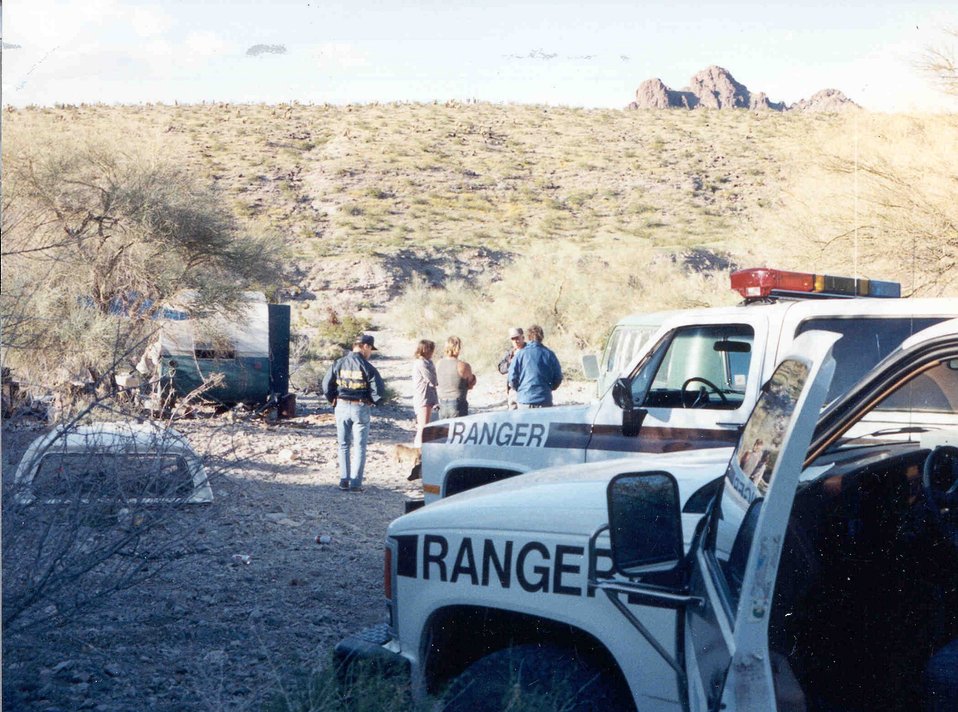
Law Enforcement Rangers "checking out" an abandoned campsite.